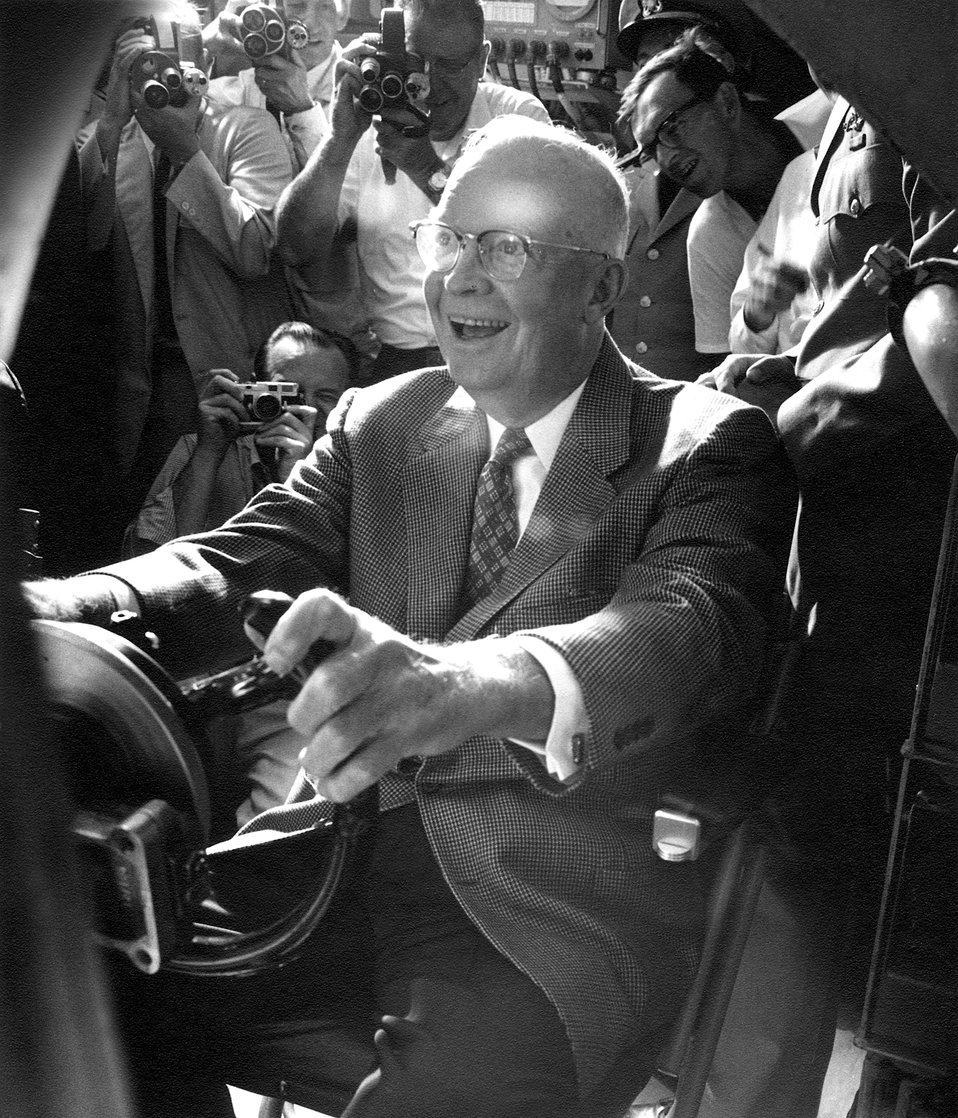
President Eisenhower at submarine controls of USS George Washington, 1960.